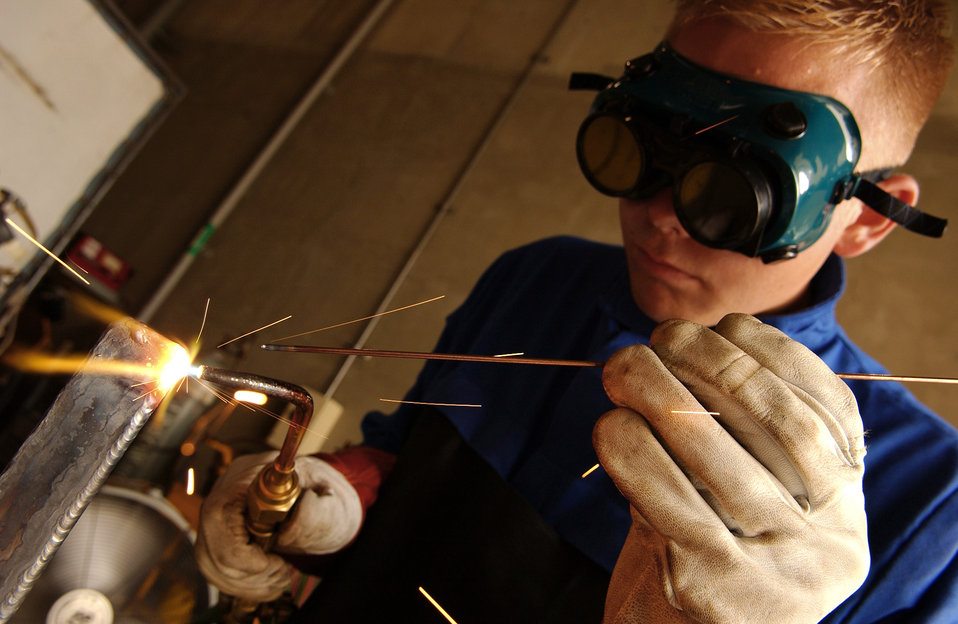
Merger provides Airmen chance to 'weld' new skills

Senior Airman Christopher Swenson, 18th Logistics Readiness Squadron vehicular equipment maintenance journeyman, practices shielded metal arc welding June 4 at Kadena Air Base, Japan. Personnel from vehicle mechanics and body shop are completing a newly implemented welding course at the Pacific Air Forces Transportation Training Center.